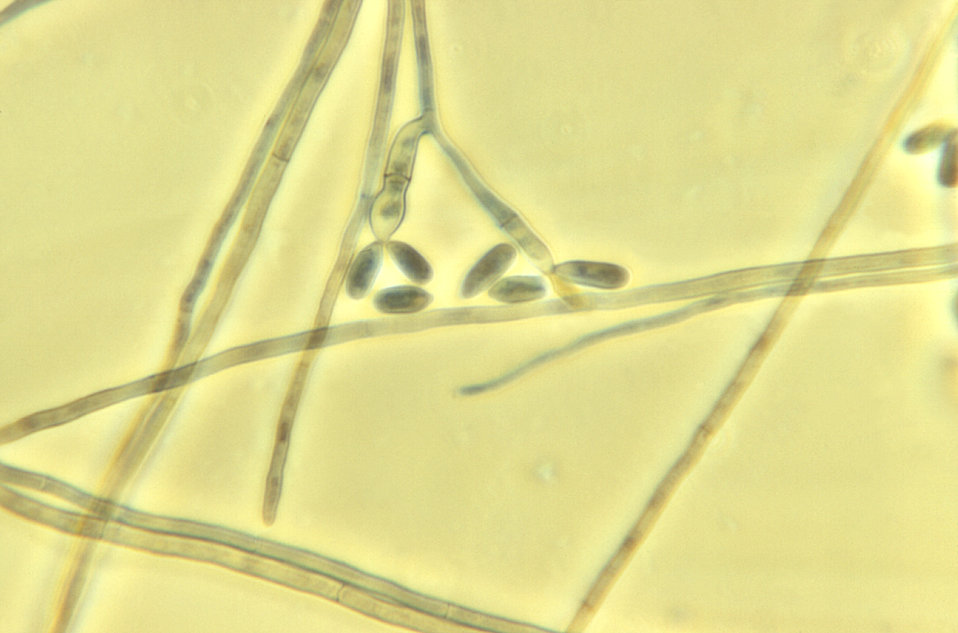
Under a magnification of 1125X, this photomicrograph revealed some of the ultrastructural morphology exhibited by the fungal organism Exophiala brunnea.